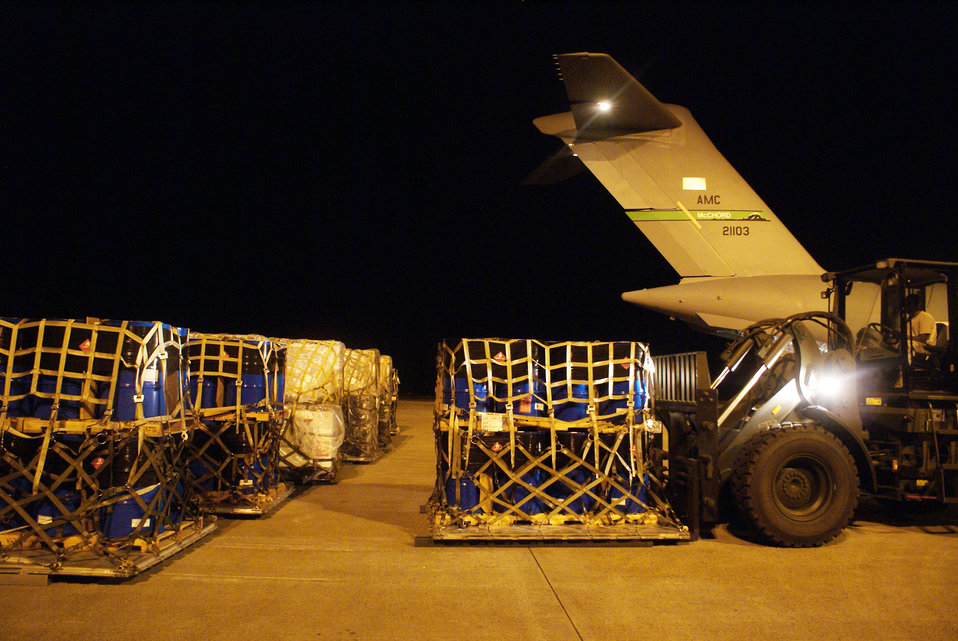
McChord Airmen provide humanitarian airlift to Indonesia

Airmen of the 36th Mobility Response Squadron from Andersen Air Force Base, Guam, use a forklift to off-load cargo from a C-17 Globemaster III on a humanitarian mission Oct. 9, 2009, at Minangkabau International Airport in Padang, Indonesia.